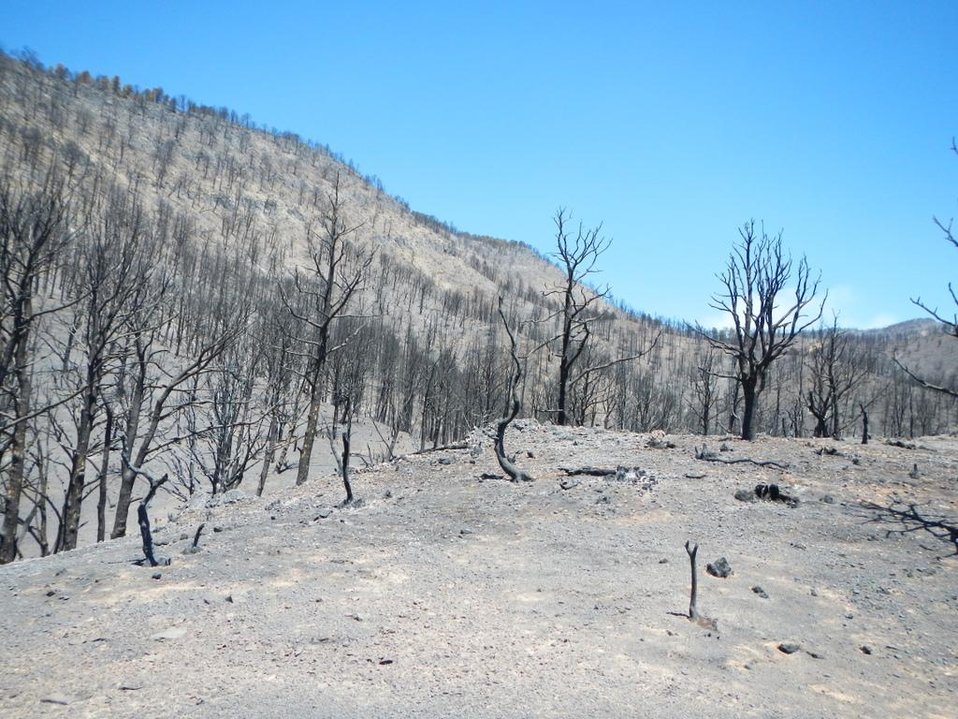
This area of high severity burn is located on the east side of the Silver Fire near Kingston, NM. The Silver Post Fire response has the Burned Area Emergency Response (BAER) team beginning operations to seed acres of high burn severity and to mulch additional acres. Seeding reduces effects to downstream life, property, and infrastructure by reducing erosion and runoff. Areas of high burn severity are to be seeded with a quick germinating, non-persistent annual cereal barley that would provide rapid ground cover. A small percentage of native perennial species would also be included to give the burned area a jump start in natural recovery, and provide for long-term ground cover. Mulch is the most effective treatment for controlling erosion and runoff, as it provides immediate ground cover. Mulch also assists in stabilizing soil in and around these areas.